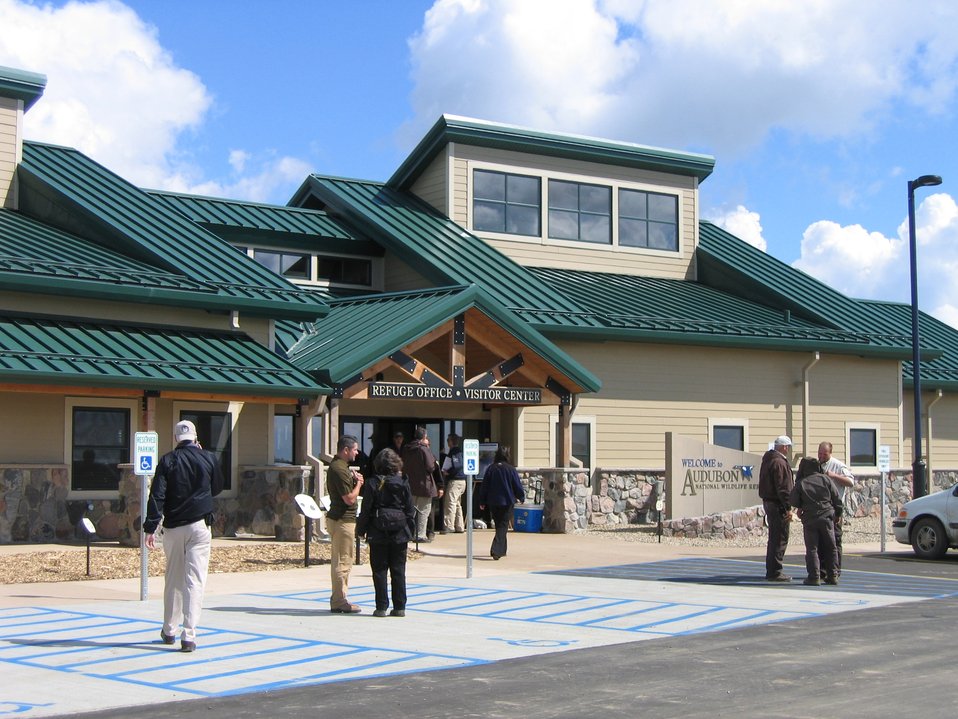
Audubon National Wildlife Refuge Headquarters and Visitor Center Entrance

Entrance at the Sept. 2, 2010 grand opening and dedication of the ARRA funded Audubon NWR Headquarters and Visitor Center in North Dakota. This 11,000 sf building became the 1st ARRA funded Headquarters/Visitor Center to open in the FWS system.